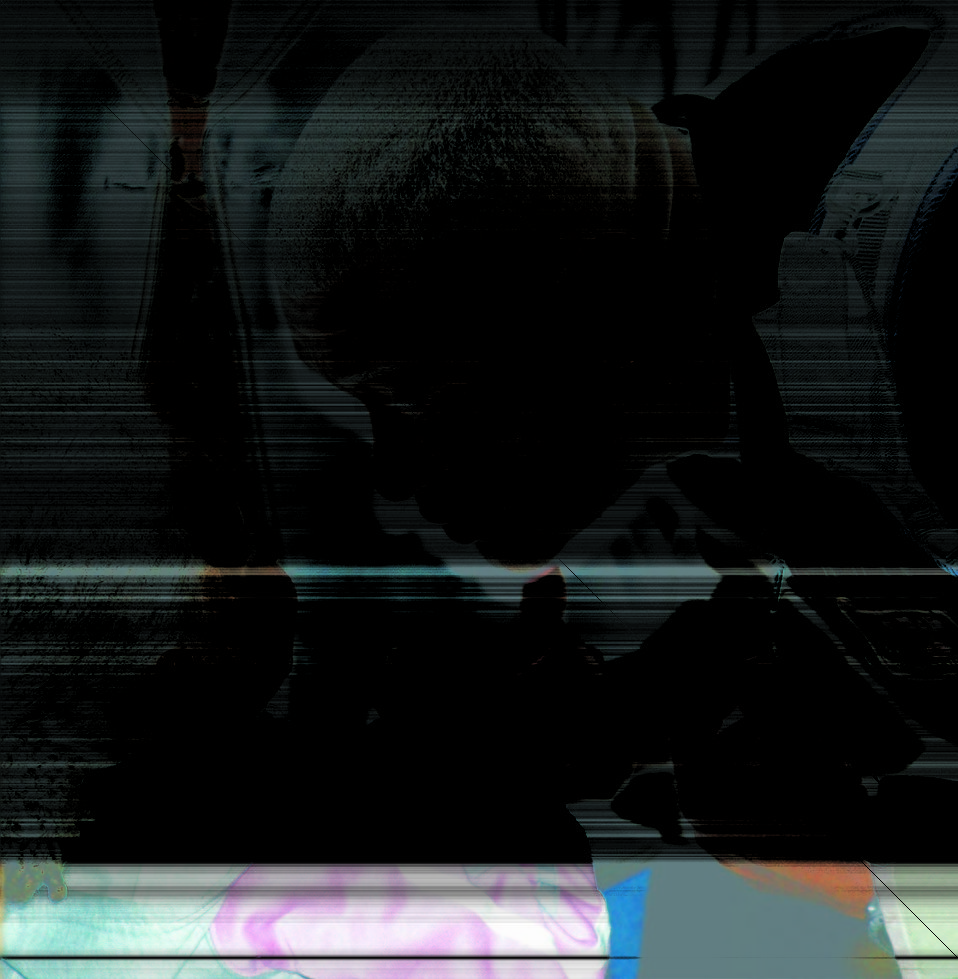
Homecoming

Master Sgt. Tony Pemberton greets his daughter Kyra, 4, at Pope Air Force Base, N.C., after returning from deployment to Southwest Asia.